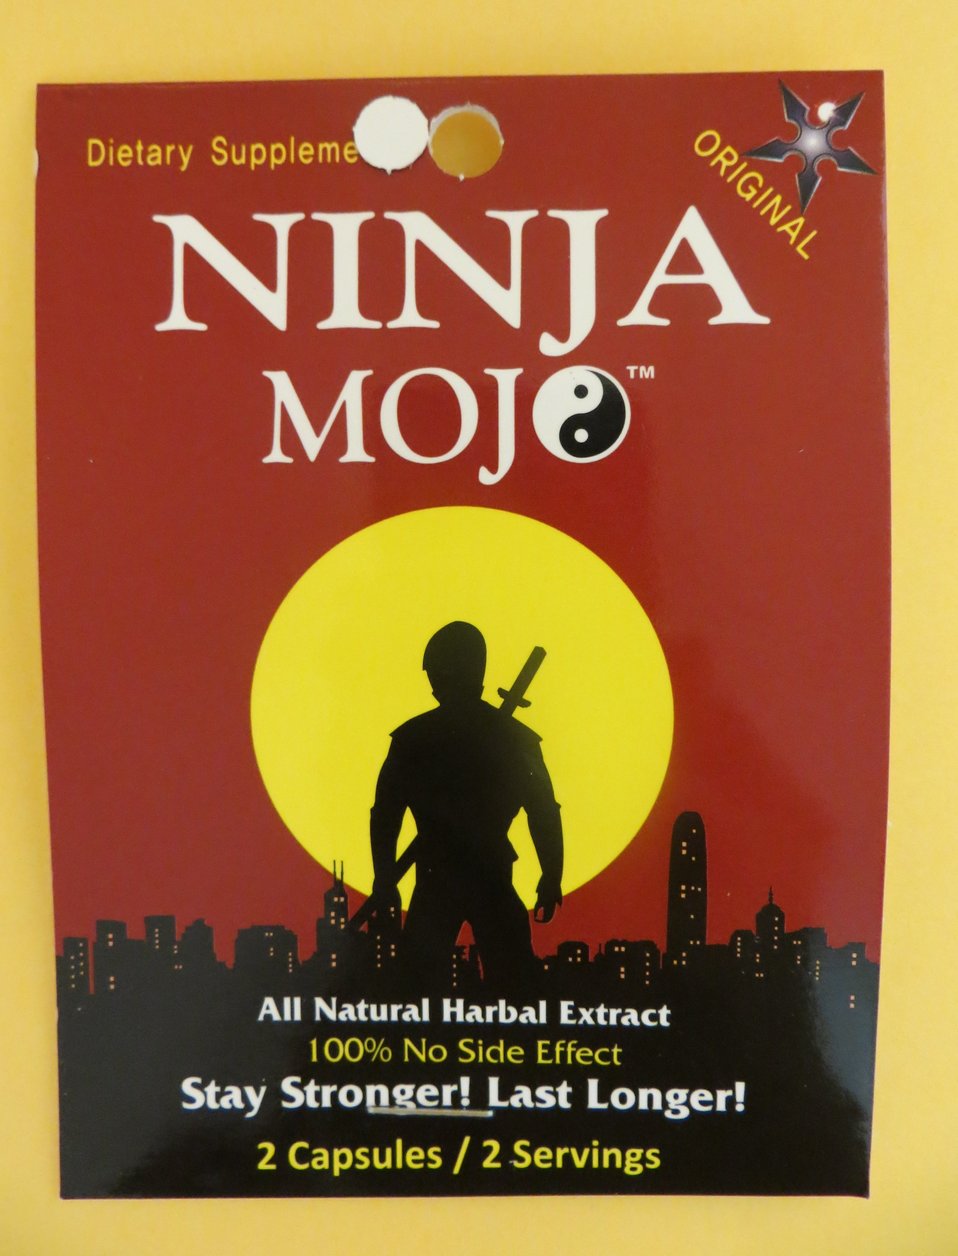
Ninja Mojo

April 3, 2013 - The FDA is advising consumers not to purchase or use 'Ninja Mojo,' a product promoted and sold for sexual enhancement. The product was found to contain undeclared tadalafil For more information, go to www.fda.gov/Drugs/ResourcesForYou/Consumers/BuyingUsingMe....

And read this Consumer Update: Beware of Fraudulent ‘Dietary Supplements’